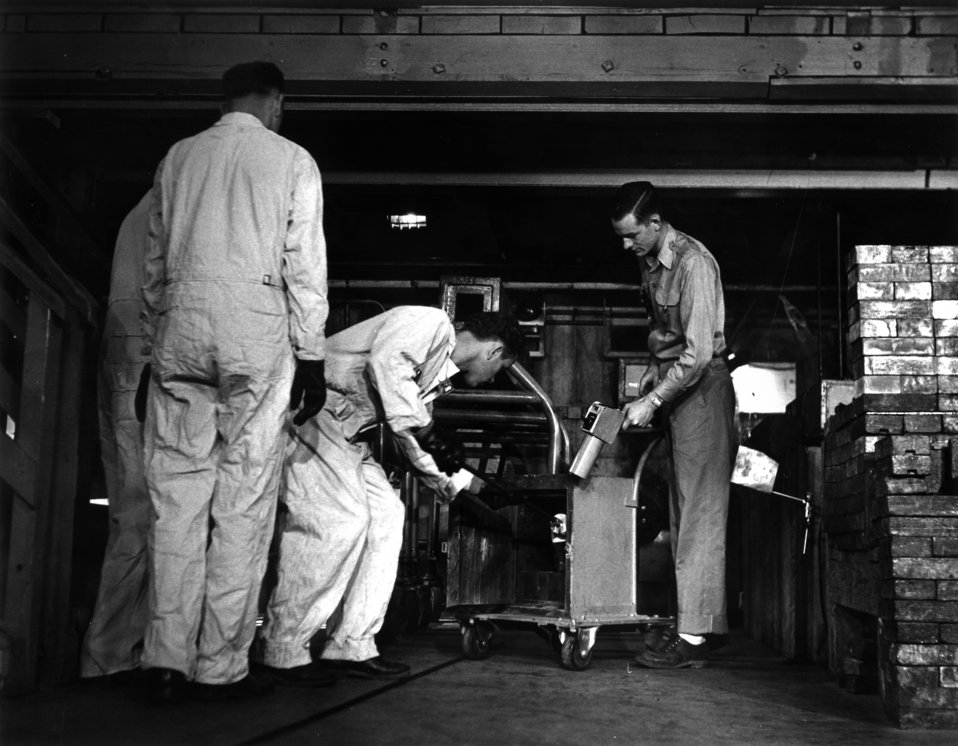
Graphite Reactor ORNL

5437-21DOE photo Ed Westcott
2-14-1949 Oak Ridge Tennessee